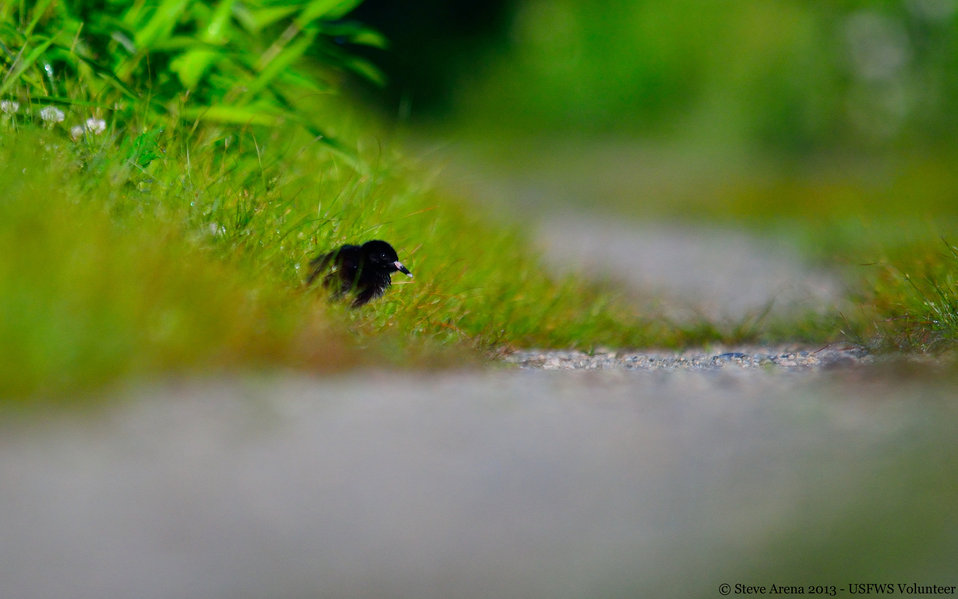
Virginia Rail (Rallus limicola) - newborn chick

Great Meadows National Wildlife Refuge, Concord, MA

Credit: Steve Arena/USFWS

09 June 2013